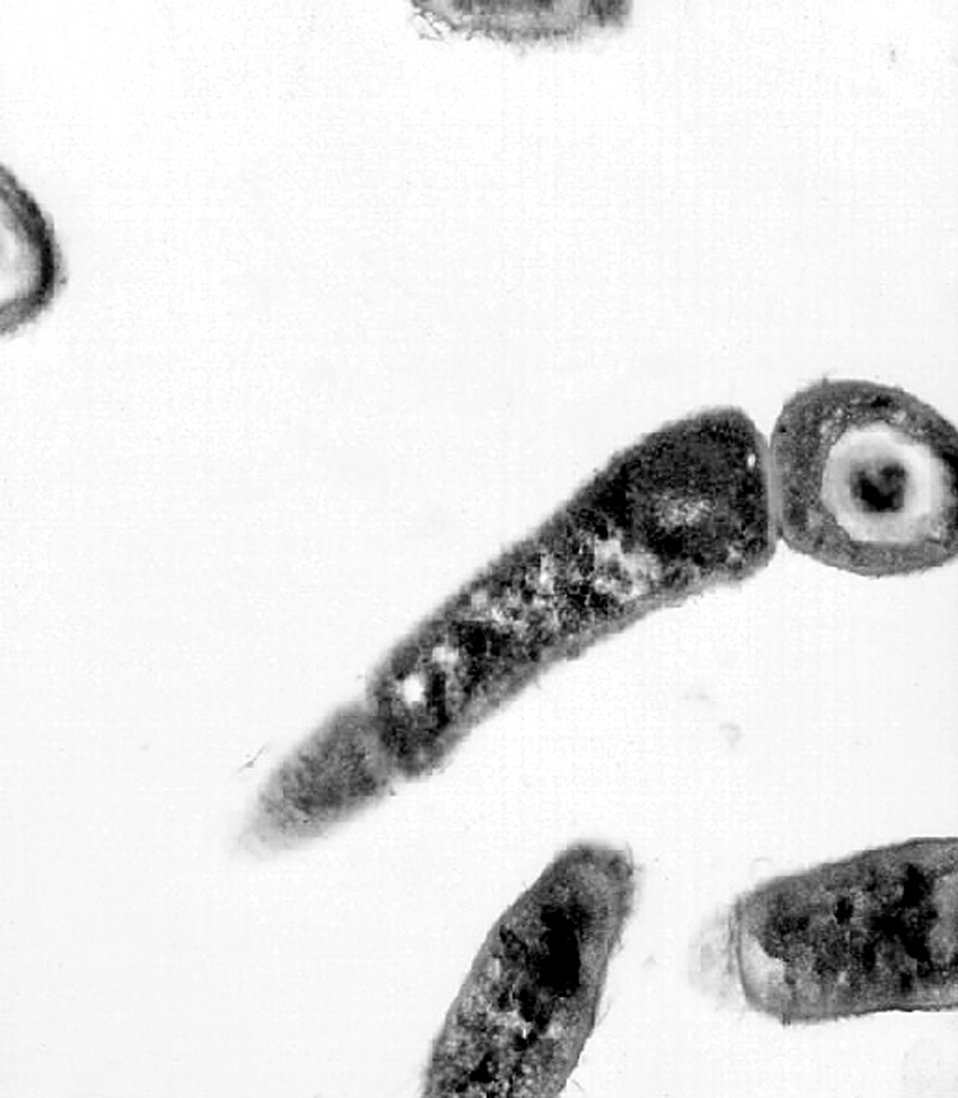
Transmission electron micrograph of Bacillus anthracis.